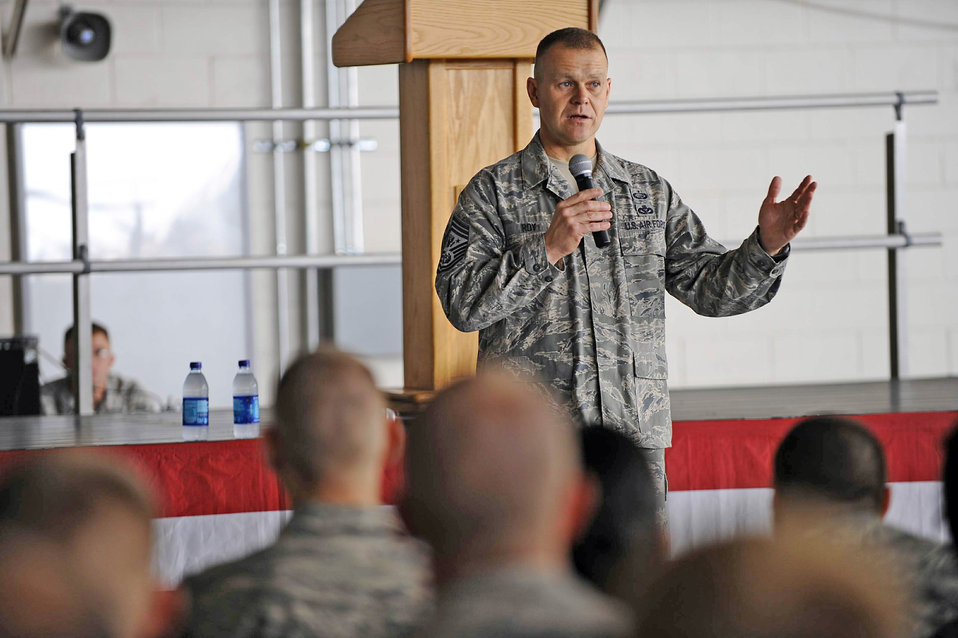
CMSAF visits Hurlburt Airmen

Chief Master Sgt. of the Air Force James A. Roy speaks to Airman
Leadership School students about the importance of being a good leader and
mentor Sept. 22, 2009, at Hurlburt Field, Fla.